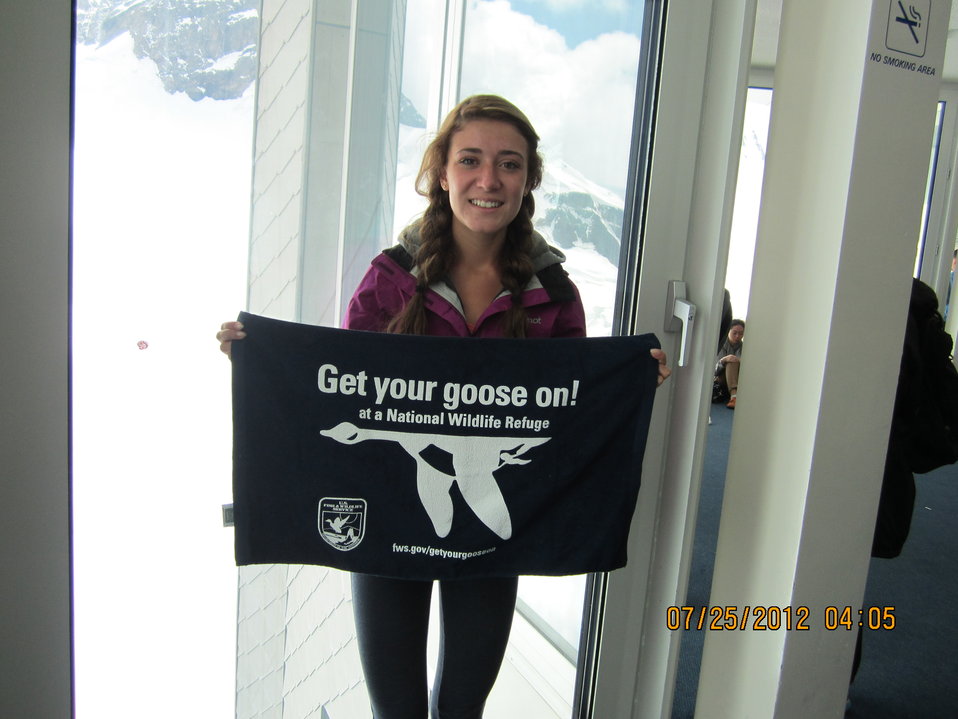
GYGO! - Swiss Alps Style!